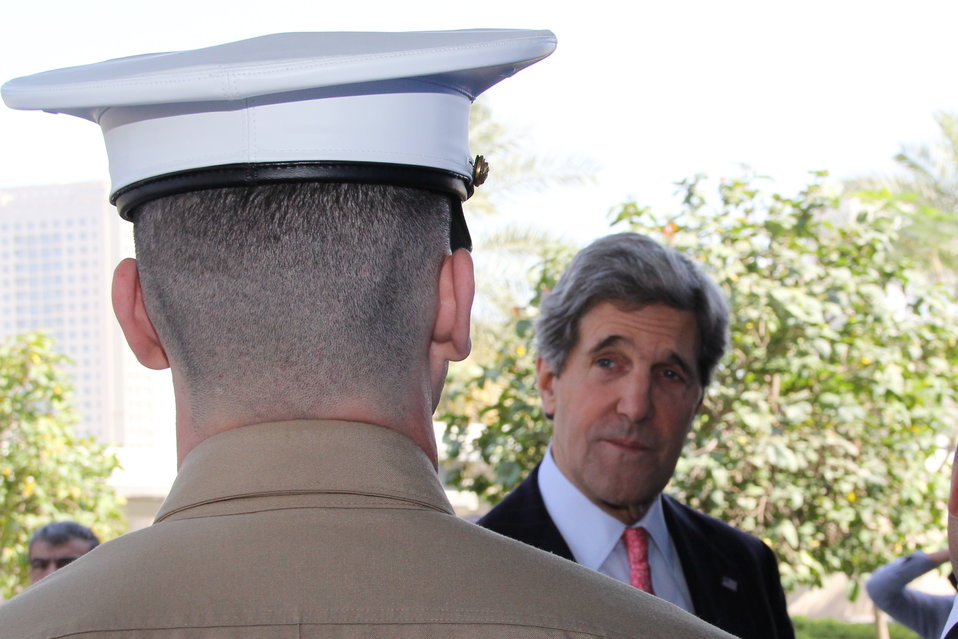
Secretary Kerry Speaks With a Marine Security Guard

U.S. Secretary of State John Kerry speaks with a U.S. Marine Security Guard at the U.S. Embassy in Abu Dhabi, United Arab Emirates, on March 5, 2013.